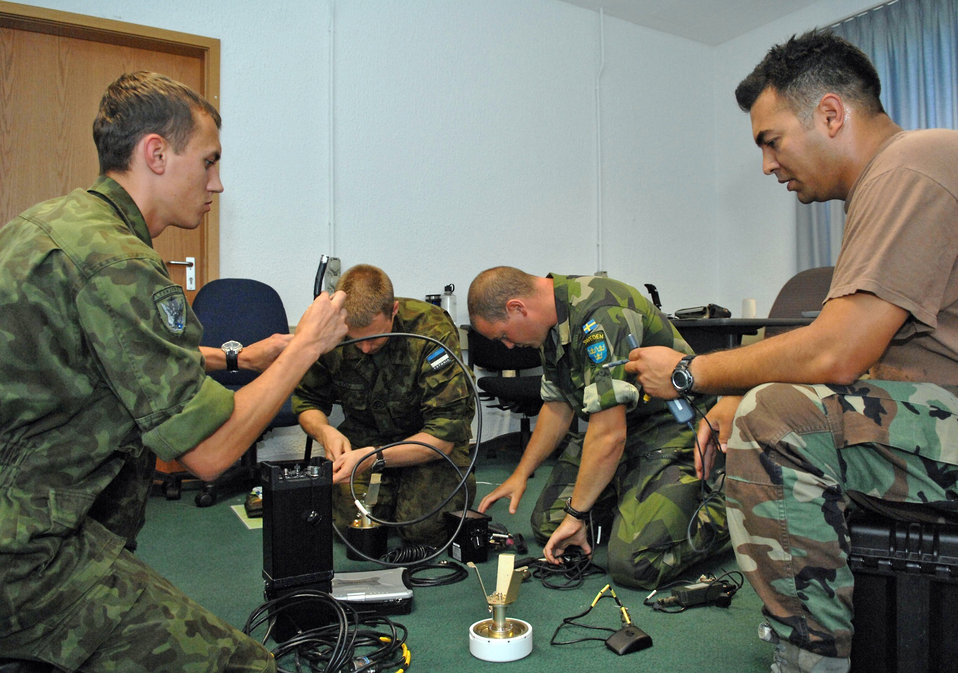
Air ground operations school helps NATO train Estonian, Swedish troops for deployment

Tech. Sgt. Nicholas Picoc (right), who is in charge of training and evaluations at the U.S. Air Forces in Europe Air Ground Operations School, assists international forward air controllers with the assembly of the ROVER III, a kit which mainly consists of a tactical laptop, antennas, cables and other items used to receive live video feed from aircraft during close-air-support operations. Two Estonian air force members and a Swedish army ranger spent a week in pre-deployment briefings, computer simulation, and field training prior to deployment thanks to the joint efforts of the staff at the USAFE AGOS and the International Security Assistance Force Cell at NATO Allied Air Component Command Headquarters Ramstein Aug. 17- 21.